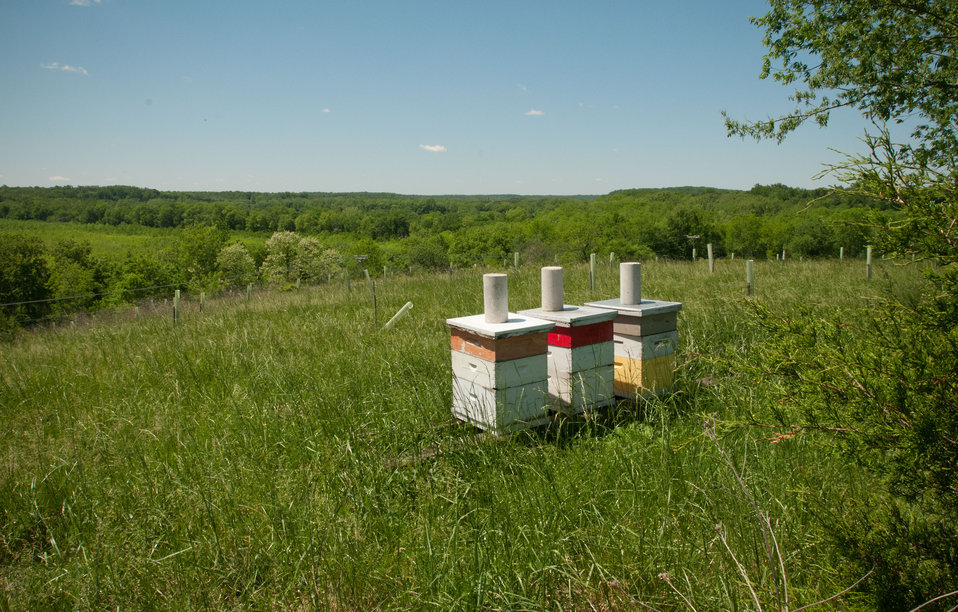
Three of the 80 bee hives of Brookview Farm in Manakin-Sabot, VA, on Thursday, May 5, 2011, that produce honey for Fall Line Farms, a local food cooperative in the Richmond, VA area that offers a wide variety of household food staples and specialty items on an ever changing inventory of fruits, vegetables, meats, soaps, eggs, cheeses, flowers, honey, pastas, sauces, syrups, baked goods, mushrooms, flour and grains. Suppliers post what they have on a Lulus Local Food online listing and customers can make their selection. Every Thursday suppliers deliver orders to, one of several pick-up points, designated by the customers in or around the Richmond area.